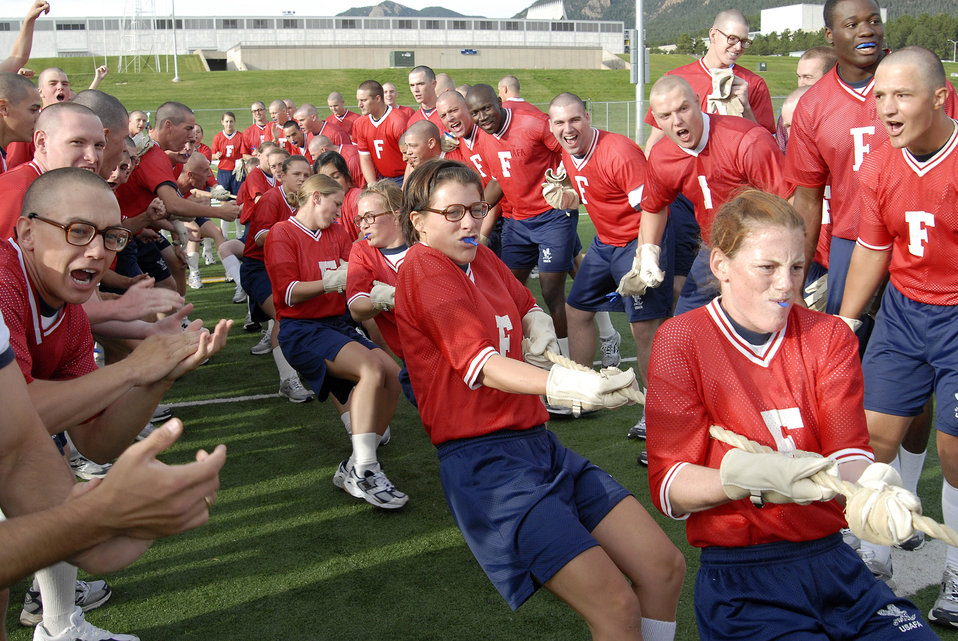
Class of 2013 Field Day

Basic cadet trainees with the U.S. Air Force Academy's Class of 2013 participate in the tug of war during Field Day activities here today. About 1,344 trainees competed in various athletic events during Field Day, including tug
of war, log relays, steeple chase and sprint relays. Basic cadet training started June 25 and continues through Aug. 1. The new cadets are in their first month of training and are learning about Air Force heritage, honor, discipline and Air Force core values, in addition to improving physical
fitness. The fall academic semester begins Aug. 6.